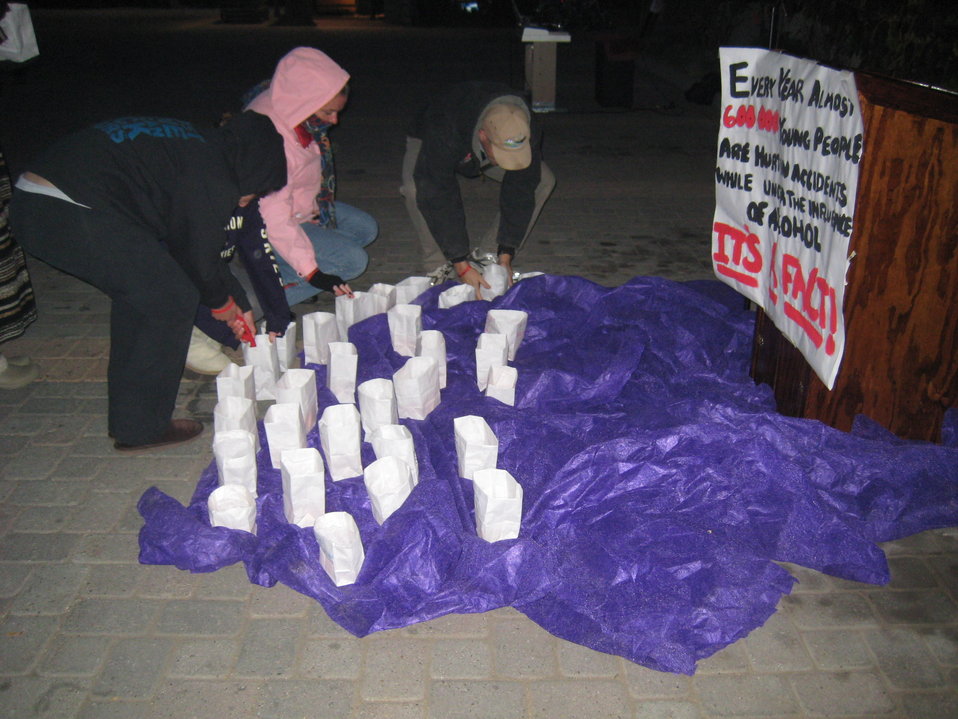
Siskiyou County Drug Facts Week Event

Those that attended the Mt. Shasta NDFW event lit luminaries for their lost loved ones.